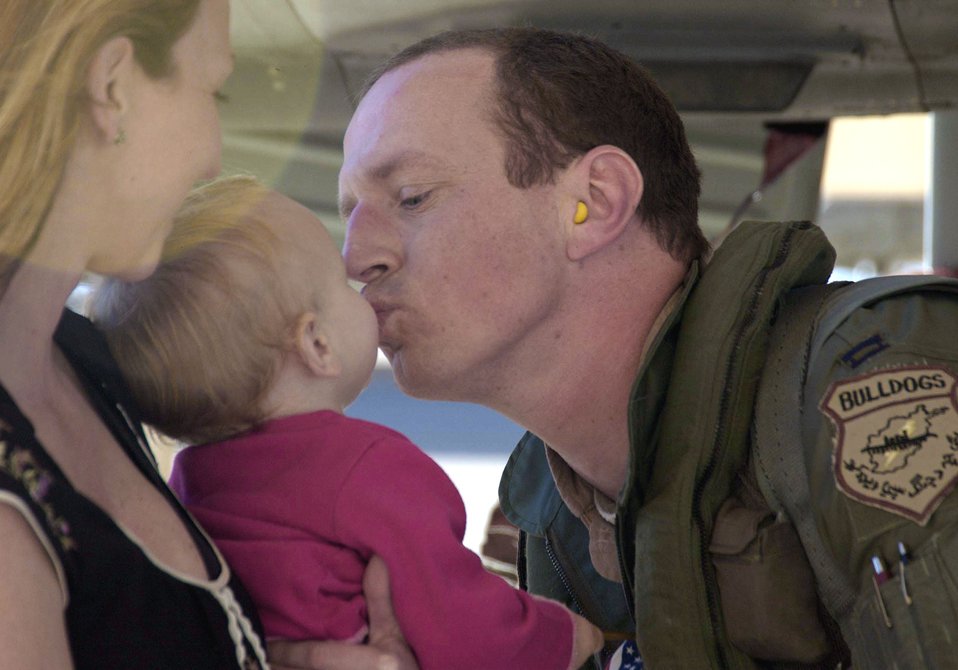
Welcome home

DAVIS-MONTHAN AIR FORCE BASE, Ariz. (AFPN) -- Capt. Steve Raspet kisses his daughter, Razzie, upon his return home Feb. 10 as his wife, Lynne, watches. Captain Raspet is an A-10 Thunderbolt II pilot assigned to the 354th Fighter Squadron. He was deployed to Bagram Air Base, Afghanistan, in support of Operation Enduring Freedom.